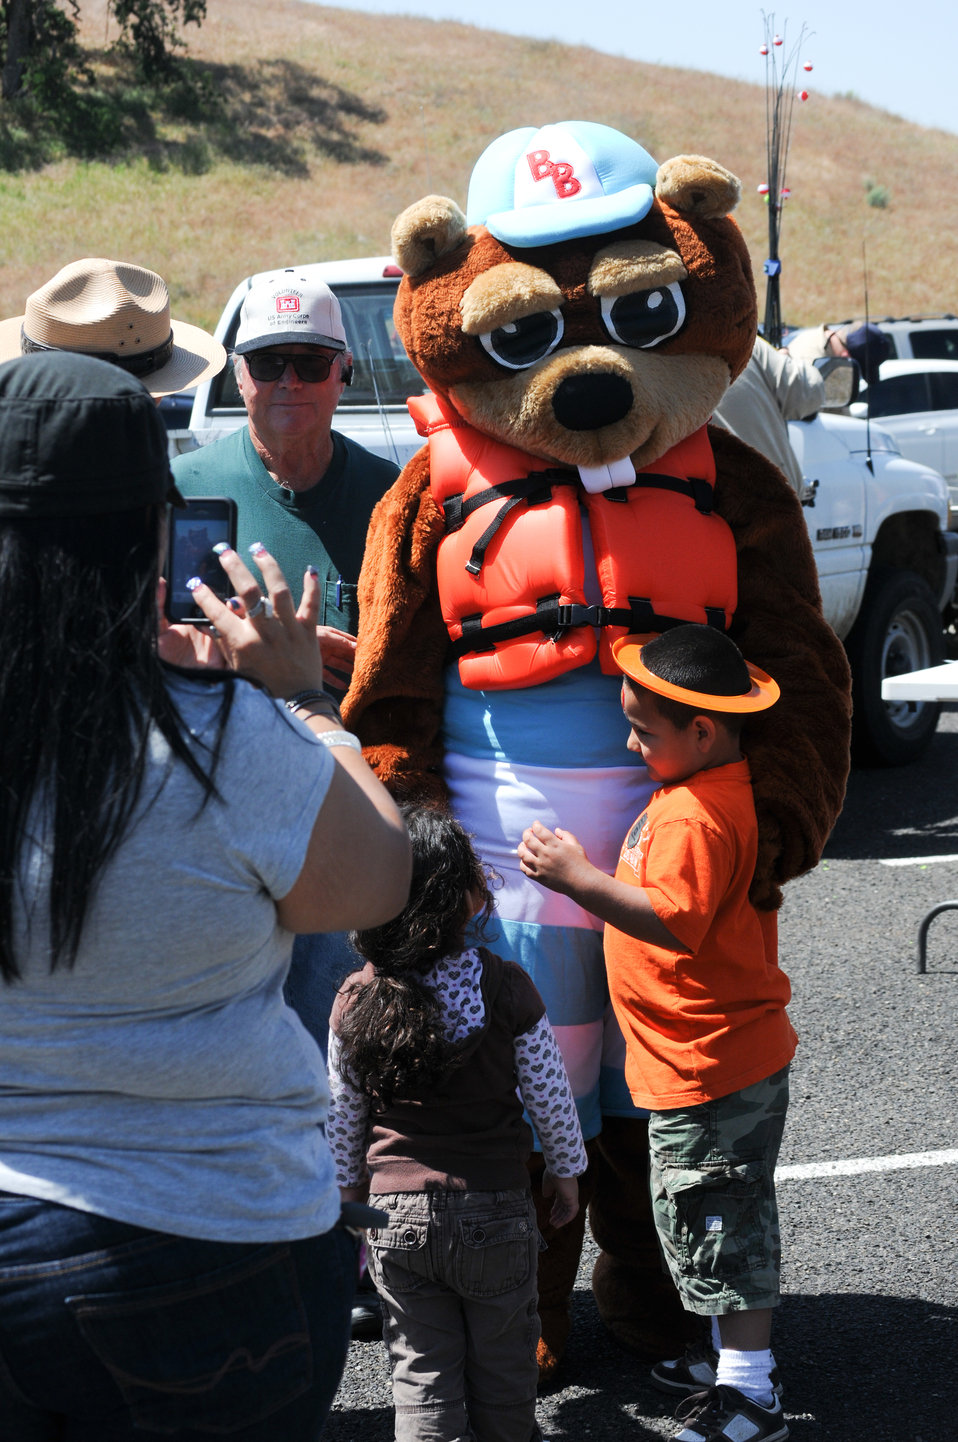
Kids Fishing Day at Hensley Lake

HENSLEY LAKE, Calif. (April 30, 2011) – Sacramento District water safety mascot Bobby Beaver greets young park visitors during the 15th annual Kids Fishing Day here April 30. The Sacramento District’s Hensley and Eastman lakes take turns hosting the event, which provides free loaner gear and clinics on fishing techniques and water safety to help connect kids with the outdoors.